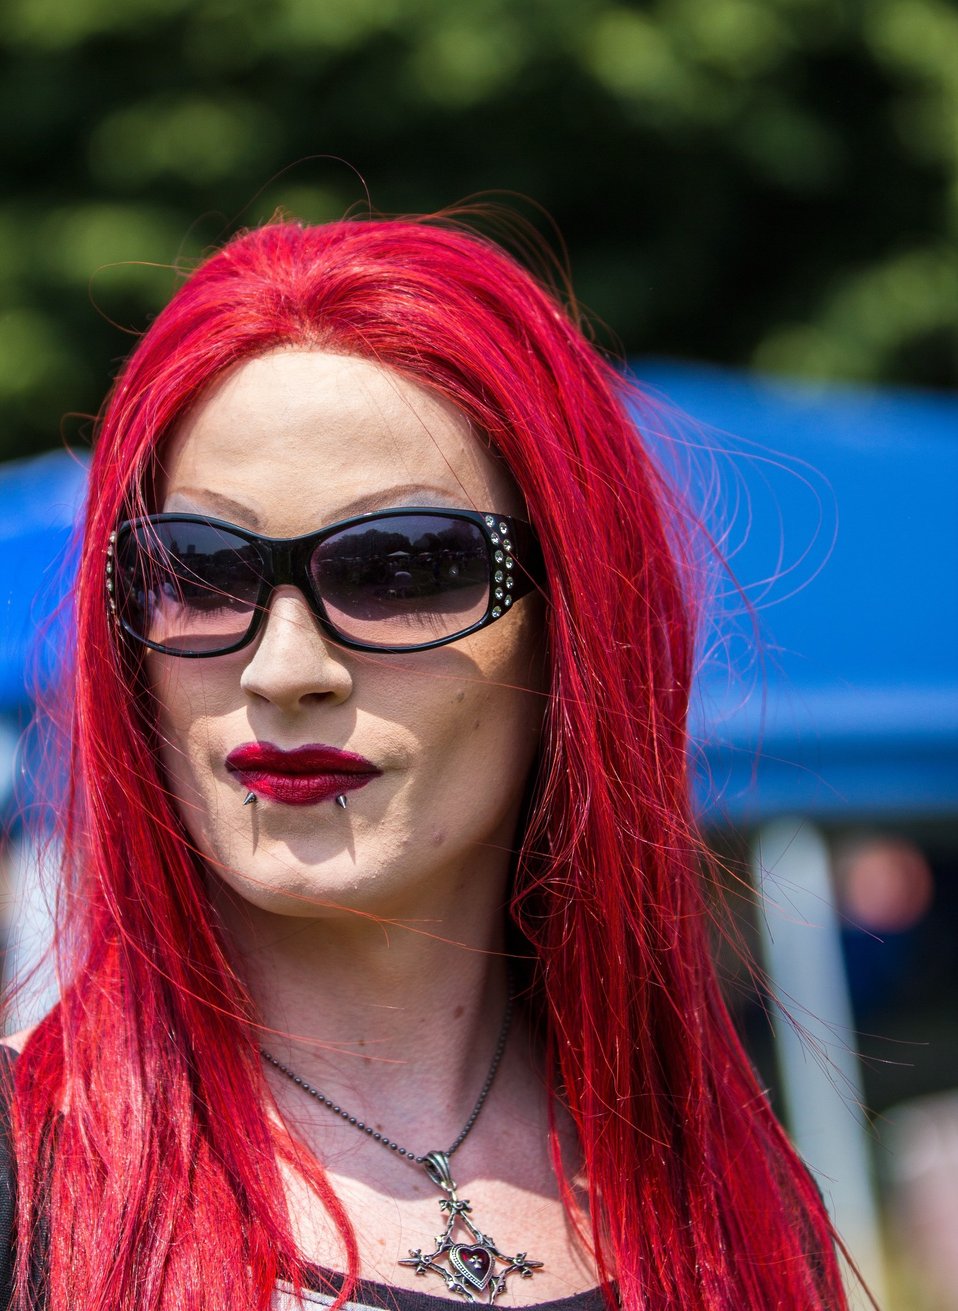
Gay pride

Pride day 2013.